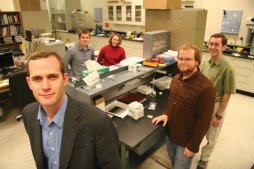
Cody Friesen

Cody's team at Arizona State received a grant for the Advanced Research and Development of Metal-Air Batteries through ARPA-E. Says Cody, 'This has the potential to dramatically decrease the cost of energy storage. A cell phone could remain powered for as long a month without charging.'